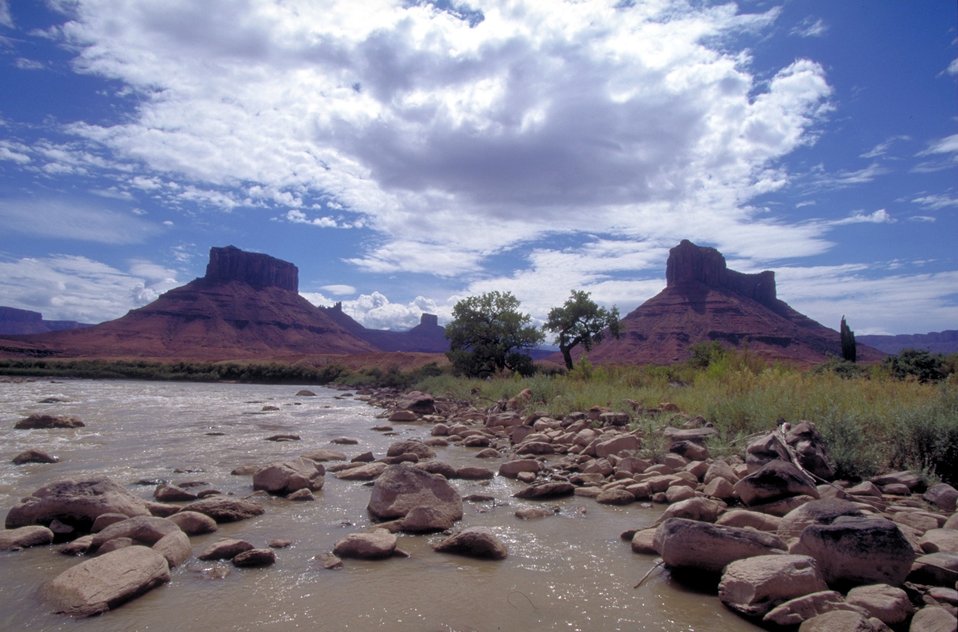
Colorado River near Moab, Utah.